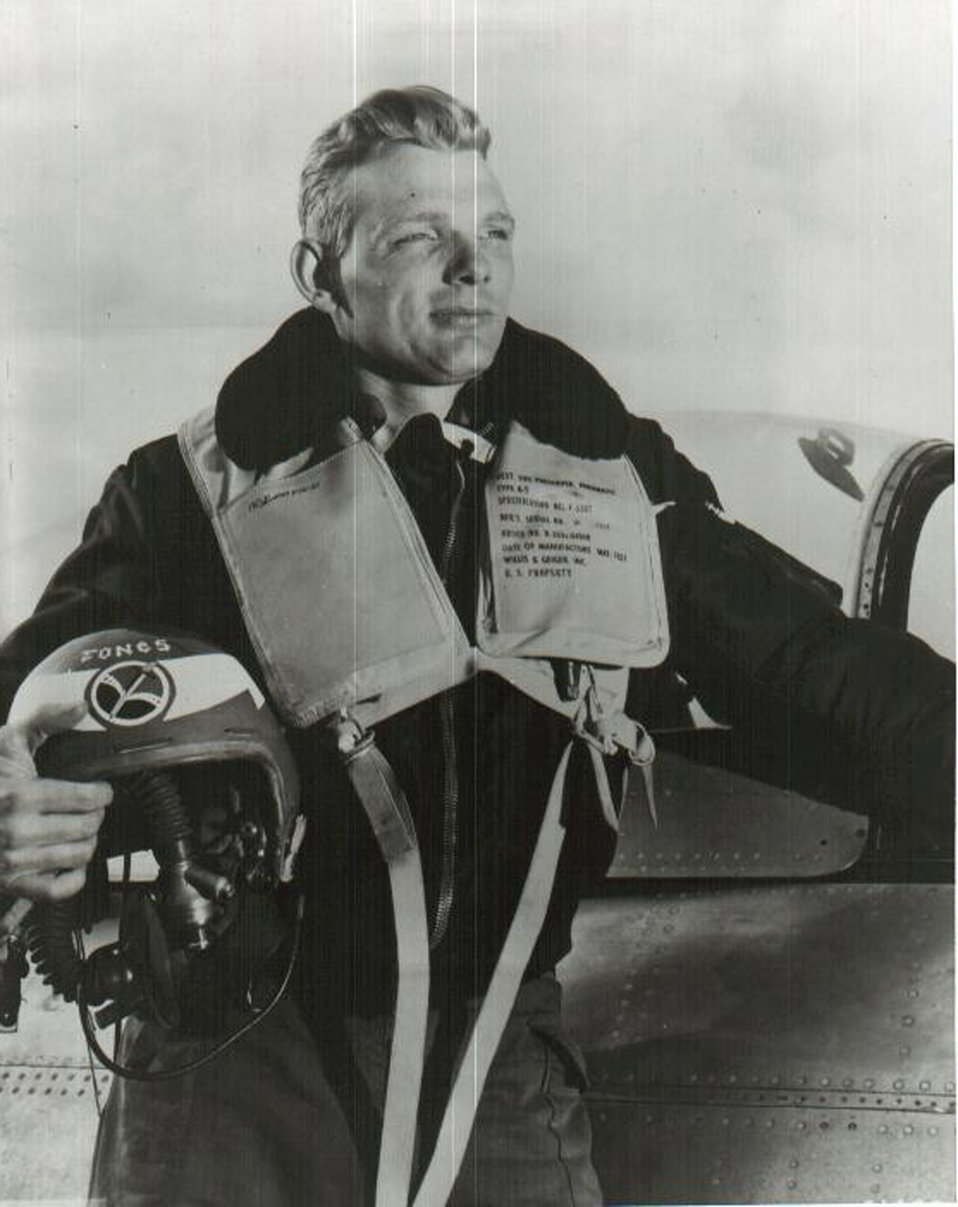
51st Fighter Wing Aces

Capt. Iven Kincheloe became the fourth ace of the wing on April 6, 1952 and the youngest ace of the war at 23 years, 9 months. Capt. Kincheloe was assigned to the 25th Fighter-Interceptor Squadron. After the war, he became a test pilot who won the Mackay Trophy. He was killed in an F-104 crash on July 26, 1958. The now-closed Kincheloe Air Force Base, Mich., was named after him in 1959.